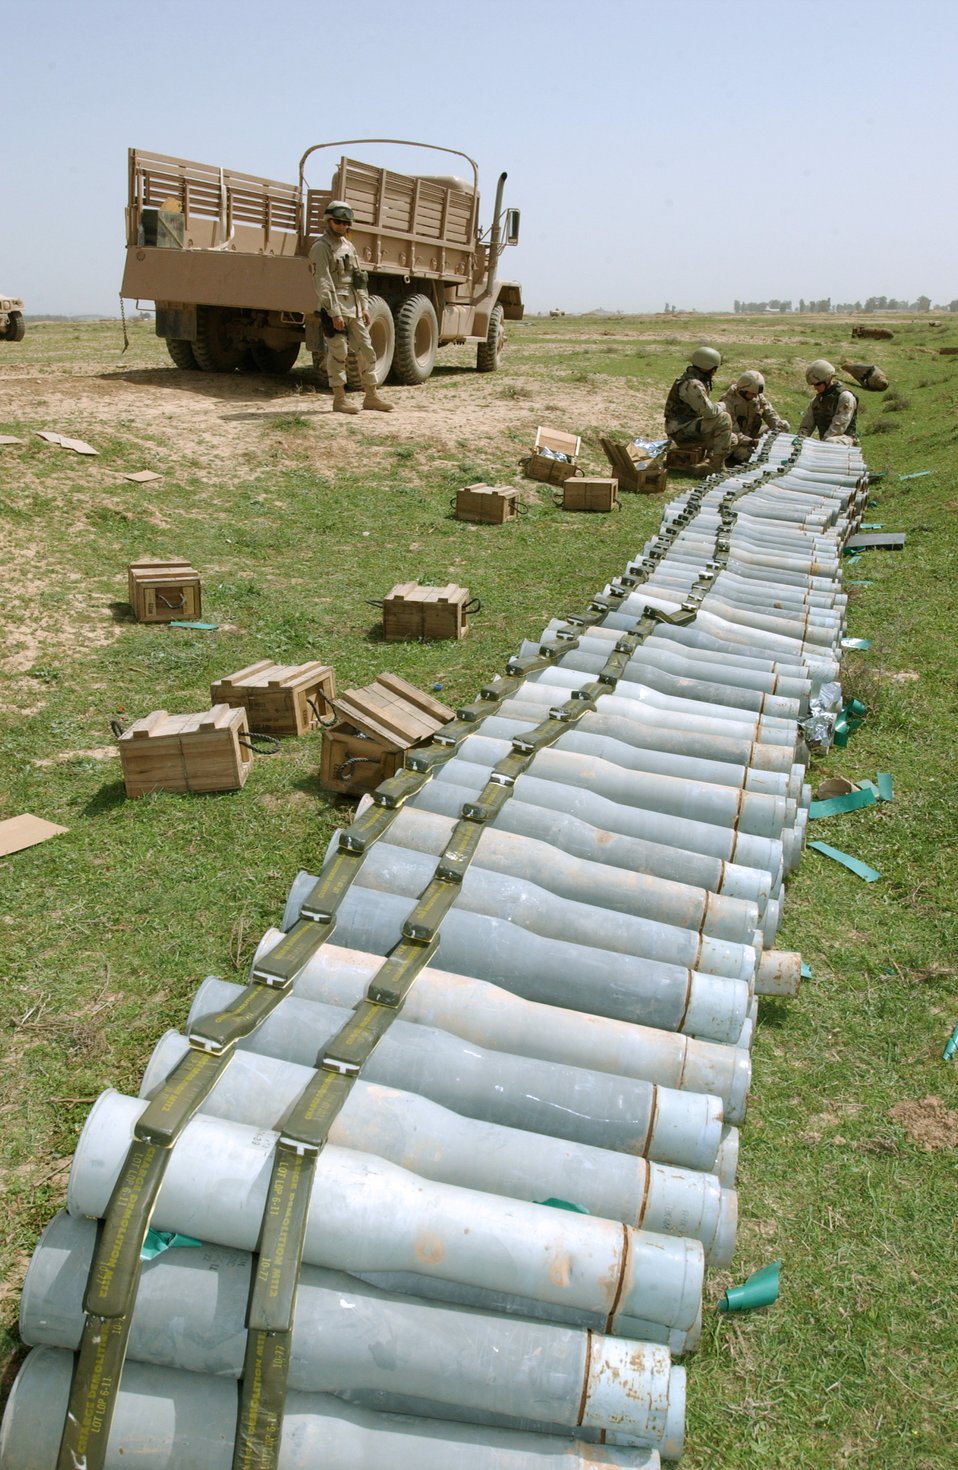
Having a blast

KIRKUK, Iraq -- Explosive ordnance disposal Airmen place C-4 explosives on weapon casings here. Including the munitions shown, there were 9,000 pounds of explosives destroyed in a recent detonation. The Airmen are is assigned to the 506th Expeditionary Civil Engineer Squadron at nearby Kirkuk Air Base.